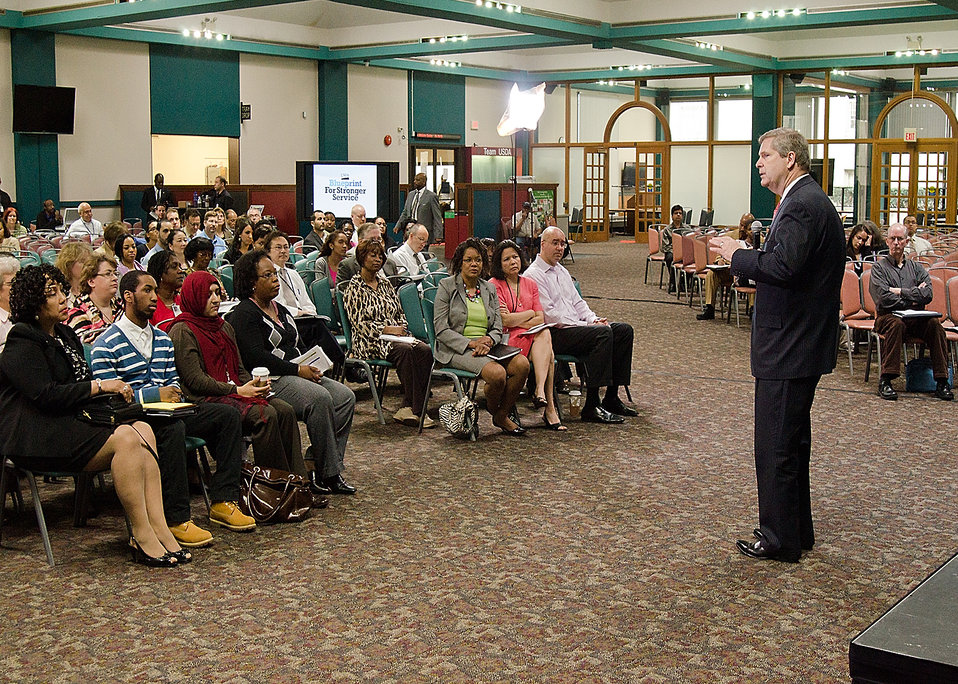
Agriculture Secretary Tom Vilsack offered U. S. Department of Agriculture (USDA) employees the opportunity to ask questions about the Blueprint for Stronger Service Initiative and hear directly from the Secretary Vilsack during the Ask The Secretary event held in the South Building Cafeteria, in Washington, D.C., on Wednesday, March 21, 2012, The Blueprint for Stronger Service Initiative aims to build a modern and efficient service organization that is closely timed with technological innovations - and better suited to respond to 21st century agricultural challenges.